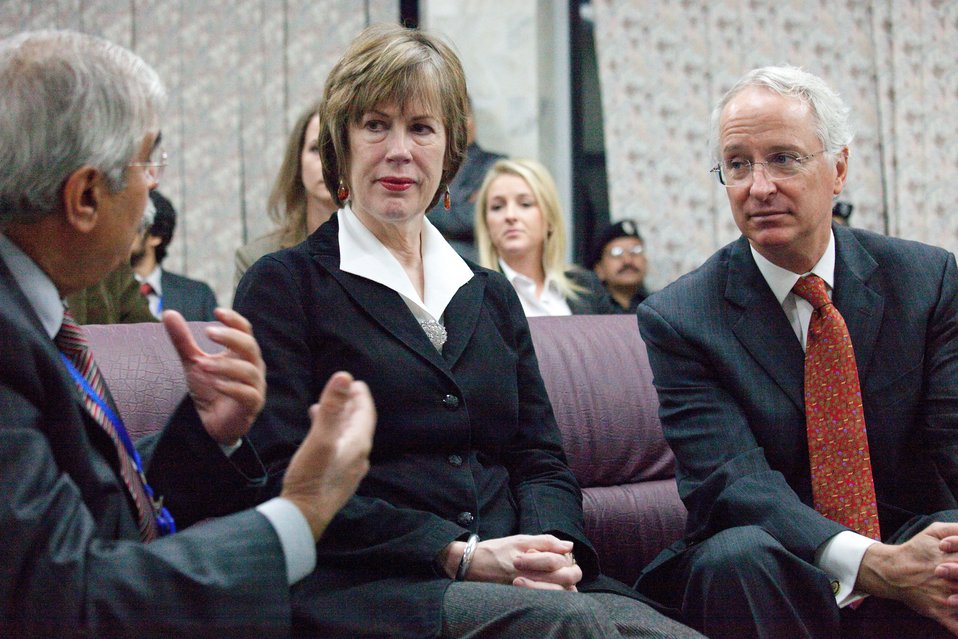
Telemedicine

Dr Asif Zafar Malik, Project Dir Telemedicine/training in a conversation with Ambassador Munter and his wife Dr Marilyn Wyatt at Holy Family Hospital in Rawalpindi.

For more information on the U.S. assistance to Pakistan, Visit
USAID:
pakistan.usaid.gov

Check our videos and photos on YouTube: